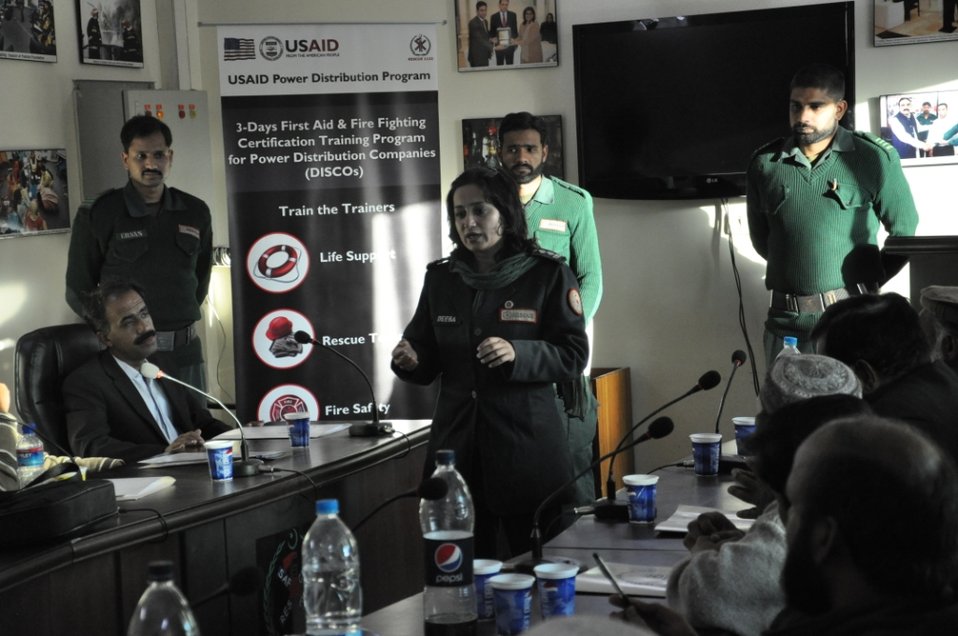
13 Dec - First Aid and Life Support Certification Program

Ms. Shahnaz Akhtar Deeba ,Senior Trainer at RESCUE 1122 in Rawalpindi explained first aid, life support and firefighting techniques to HESCO’s linemen, line supervisors and SDOs who later replicated the training at HESCO in the capacity of trainers. This life saving training will be replicated with staff from the remaining 8 DISCOs as part of the USAID Power Distribution Program’s ‘Quick Impact Safety Training Program’ for DISCO linemen. Such programs will assist in bringing down on the job fatality rates in DISCOs.